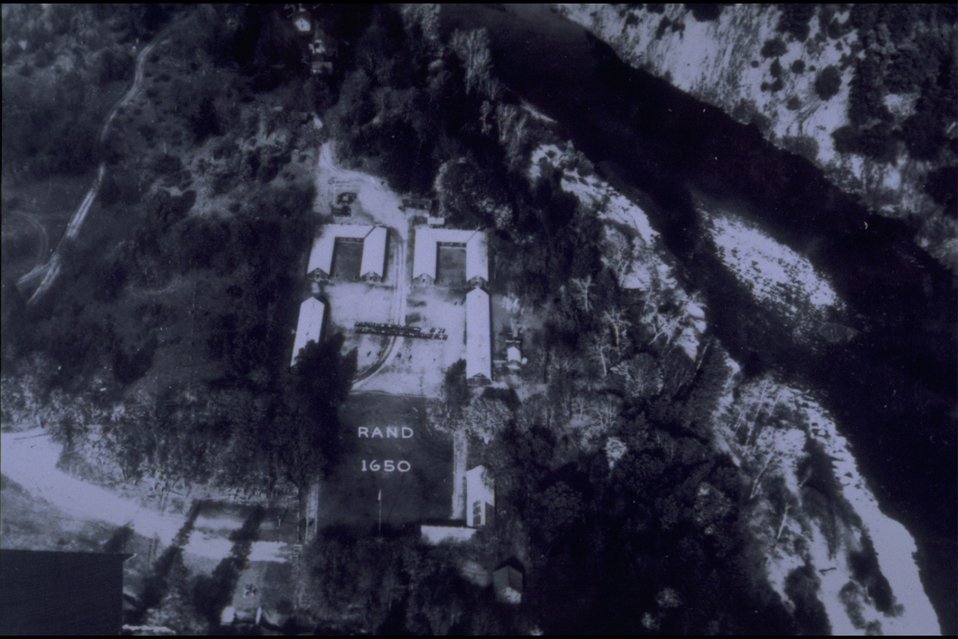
Rogue River - Camp Rand - Co. 1650 Civilian Conservation Corp., aerial view.